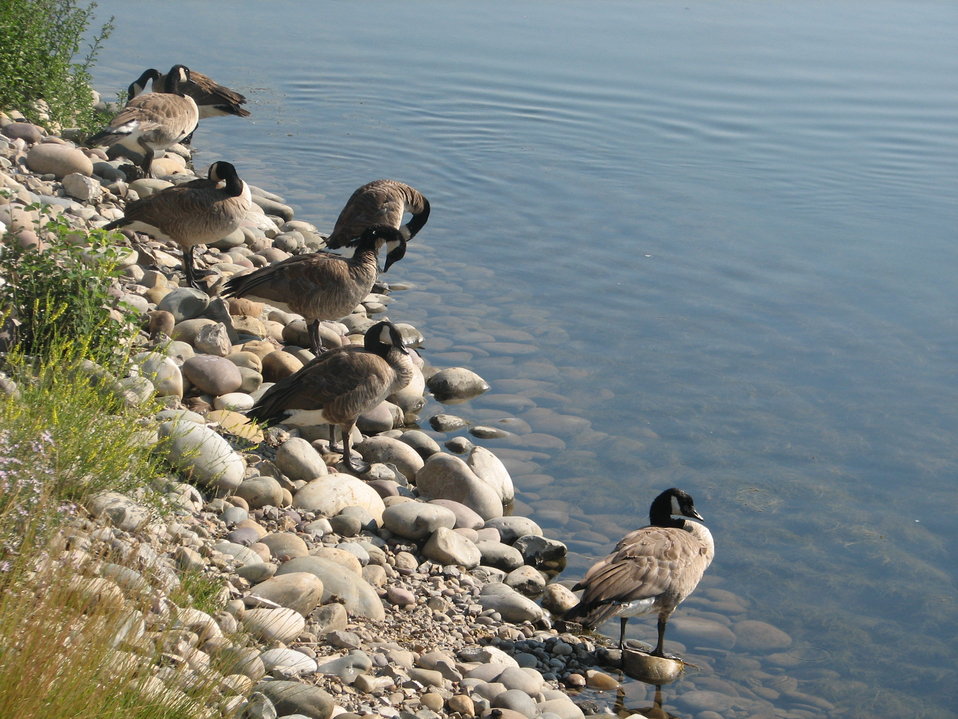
Geese on Flat Creek Shoreline

A group of Canada geese line the bank of Flat Creek on a clear, calm summer morning, just north of the Jackson Hole & Greater Yellowstone Visitor Center on the National Elk Refuge.